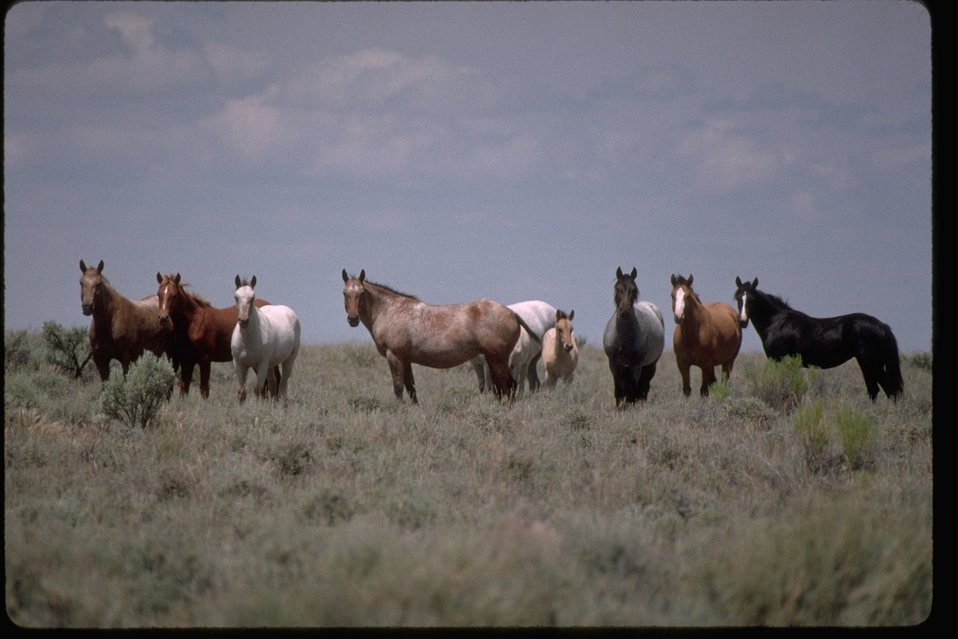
East Warm Springs Wild Horses on the range. East Warm Springs Herd Management Area in the Burns District, Oregon.